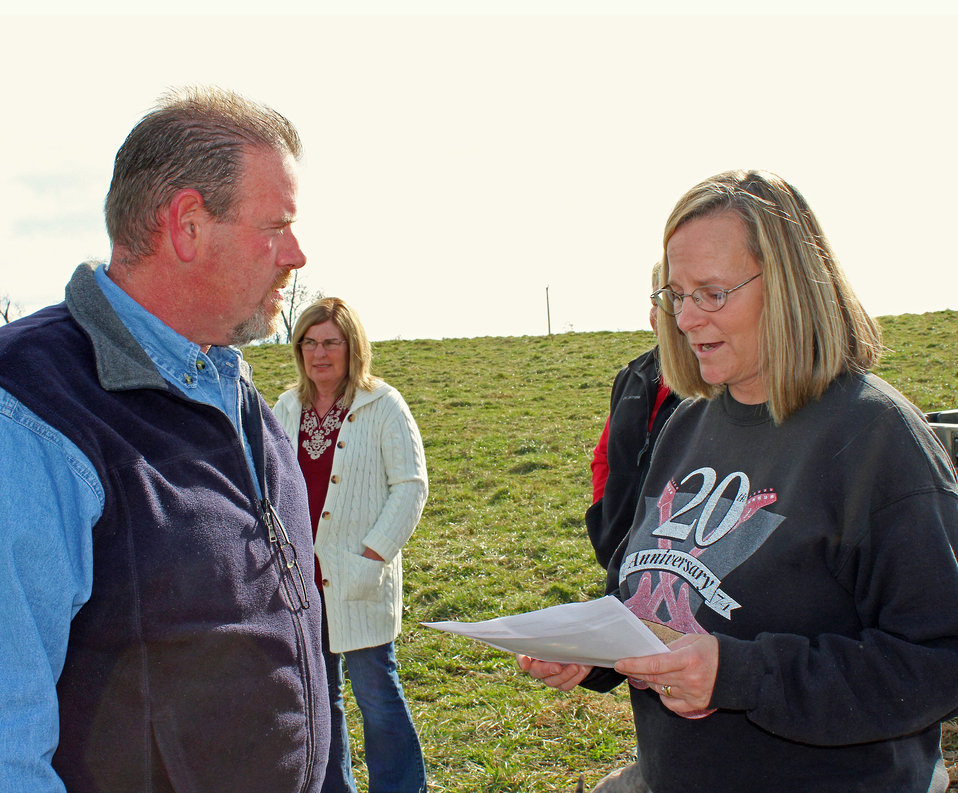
Masters CSP 2133

U.S. Department of Agriculture (USDA) Natural Resources Conservations Service (NRCS) Lead District Conservationist Tony Burnett discusses a Conservation Stewardship Program plan with Masters Charolais Farm owner Rose Ann Masters on her farm in Mayslick KY on Nov. 18, 2012.